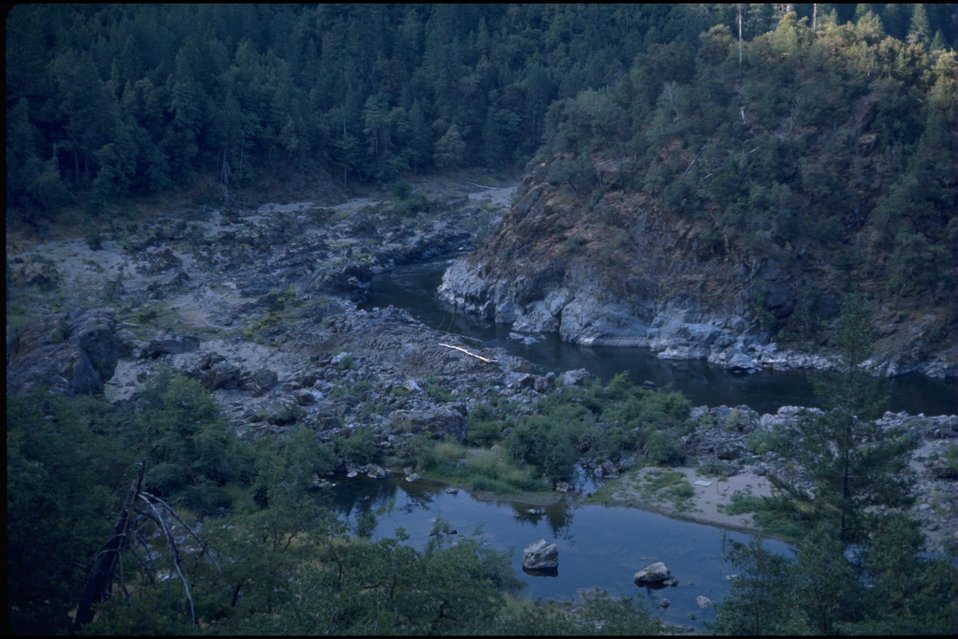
Rogue River - Horse Shoe Bend, aerial photo.